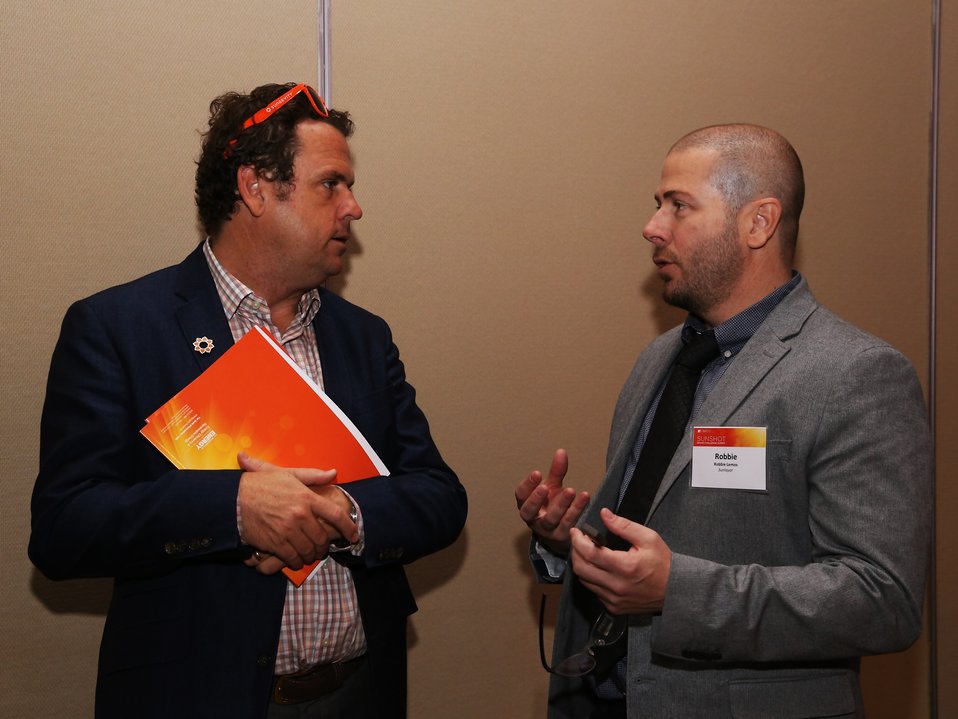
Day 2 Keynote Session 18

Danny Kennedy, Sungevity Co-Founder and Senior Vice President, chatting at a keynote session break.